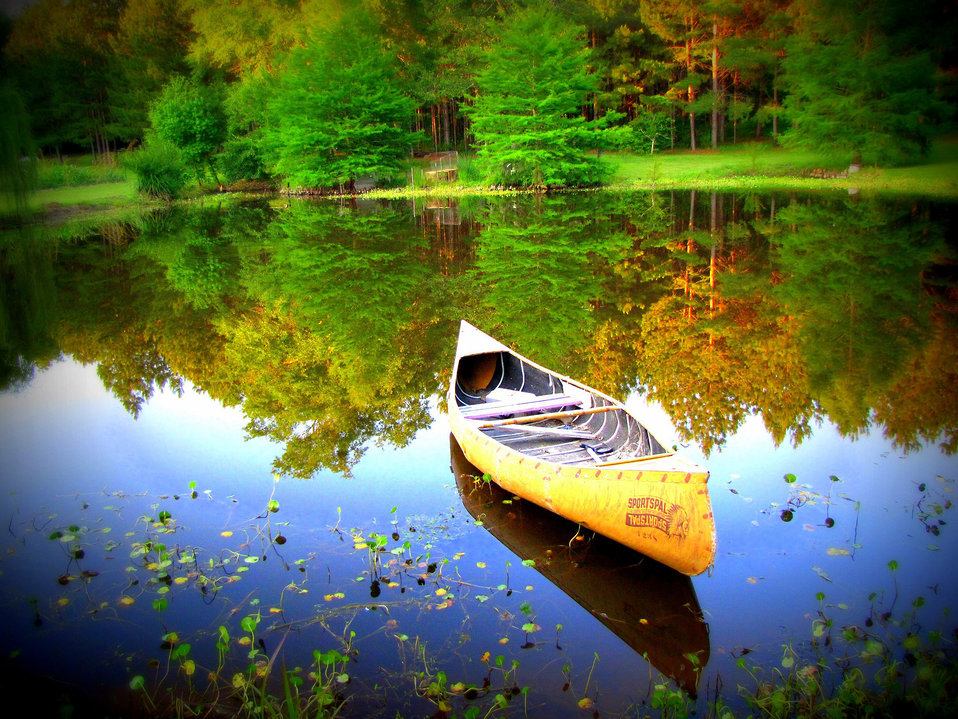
Canoe in pond.